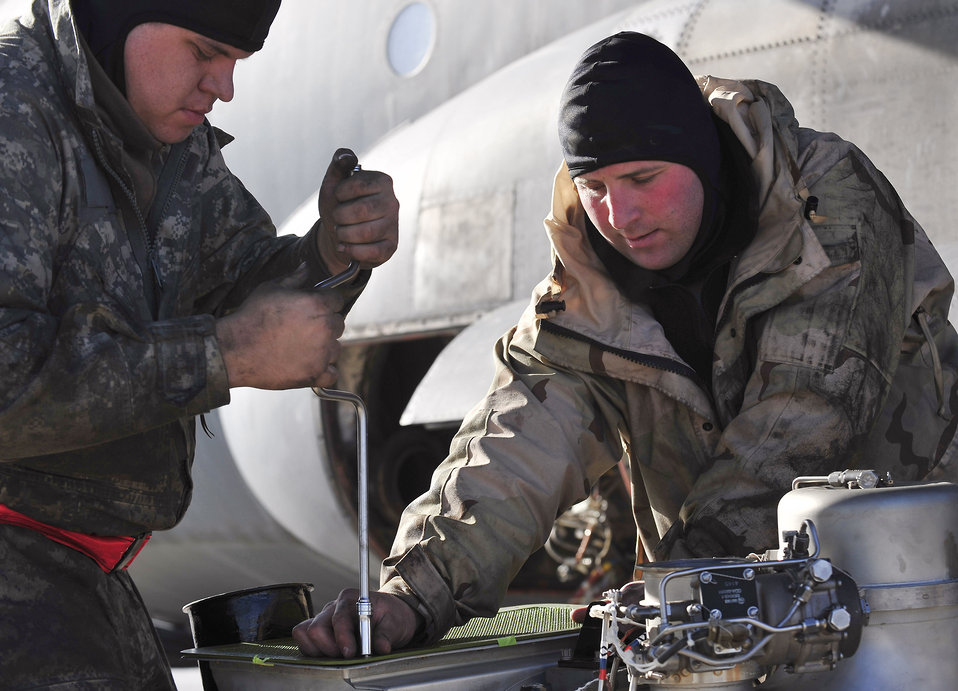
Maintaining mighty Hercules

Technical Sgt. Sam Harmon assists Senior Airman Billy Howell in removing an inlet duct protector Jan. 16 at Joint Base Balad, Iraq. This is one of many steps in changing an auxiliary power unit of a C-130 Hercules. Sergeant Harmon and Airman Howell are 777th Expeditionary Aircraft Maintenance Unit jet engine mechanics. They are deployed from Little Rock Air Force Base, Ark.